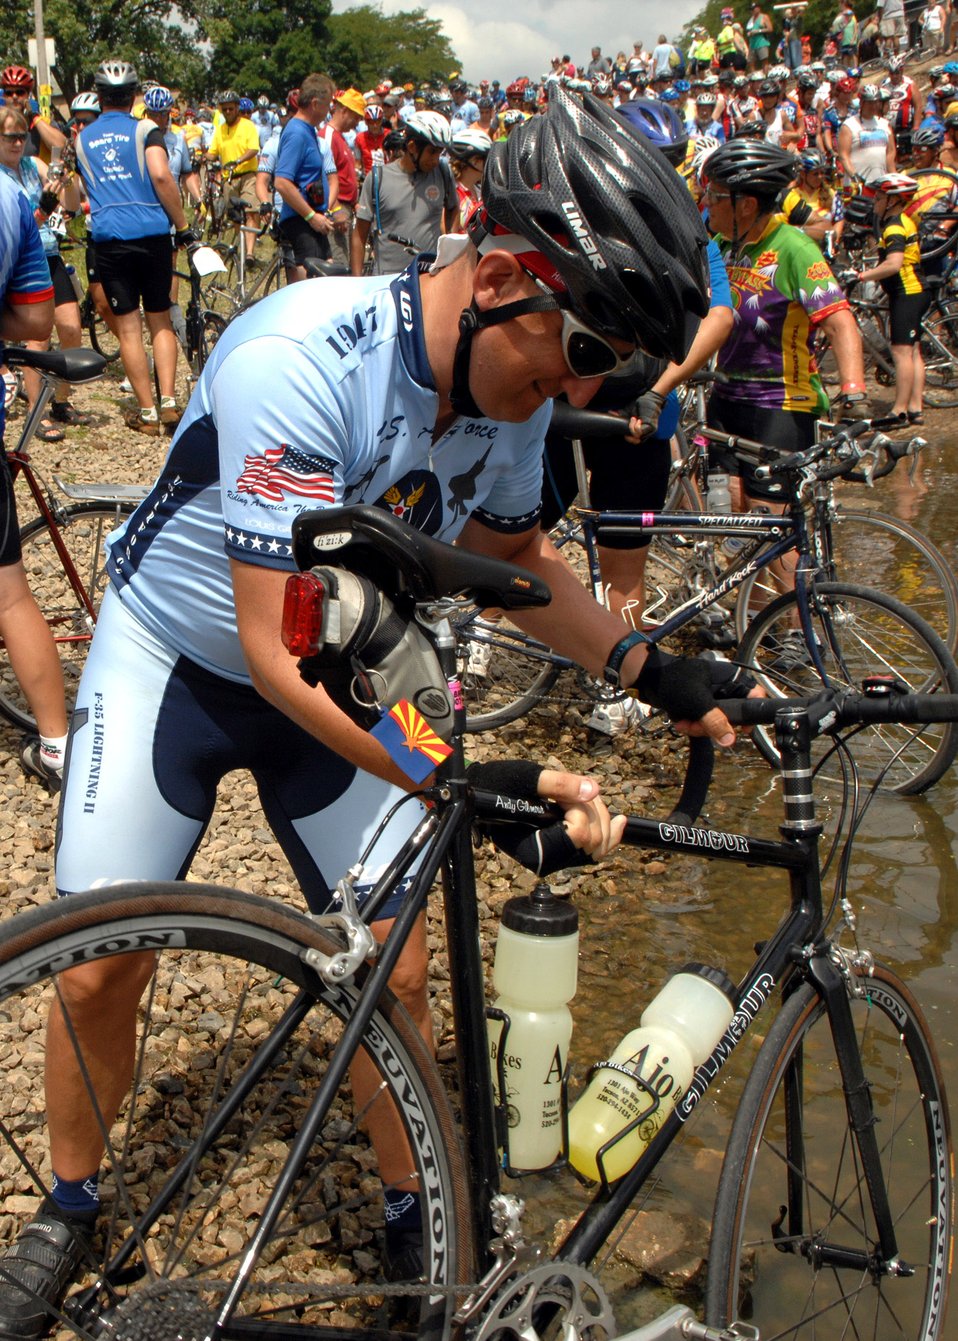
Air Force team a large presence in annual bike ride

A member of the Air Force Cycling Team dips his front tire in the Mississippi River in Bellevue, Iowa, July 28 after completing the Des Moines Register's Annual Bicycle Ride Across Iowa, or RAGBRAI. Dipping the front tire in the river is the traditional completion of nearly 500-mile bike ride across the state.